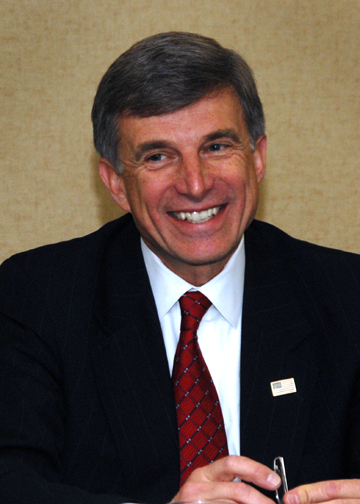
Air Force undersecretary: celebrate successes, secure the future

The Honorable Dr. Ronald Sega